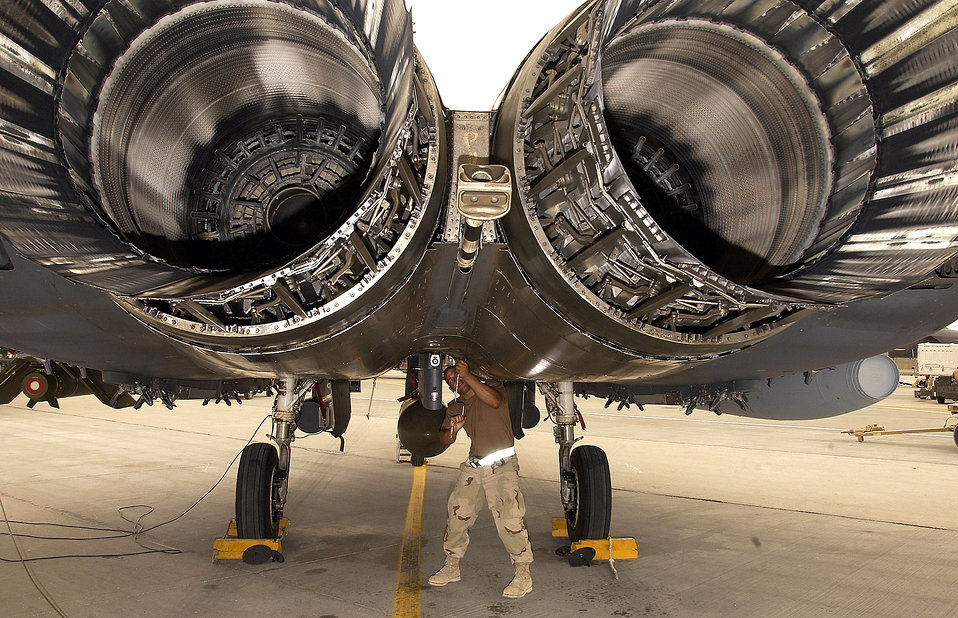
Eagle maintainer

SOUTHWEST ASIA -- A crew chief from the 335th Expeditionary Fighter Squadron prepares an F-15E Strike Eagle for a mission at a forward-deployed location on March 21, 2003. The Strike Eagles from Seymour Johnson A.F.B., are deployed in support of current operations in the Middle East.